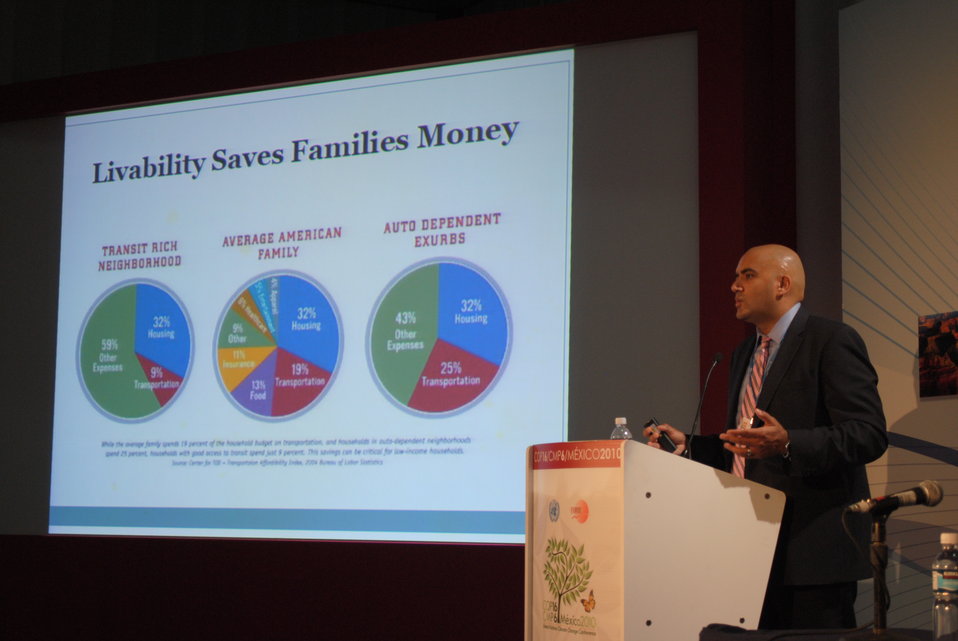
U.S. Department of Transportation's Shailen Bhatt Presents “Livability”

Shailen Bhatt of the U.S. Department of Transportation presents the side event, “Livability,” at the U.S. Center at COP-16 in Cancun, Mexico, on December 1, 2010.